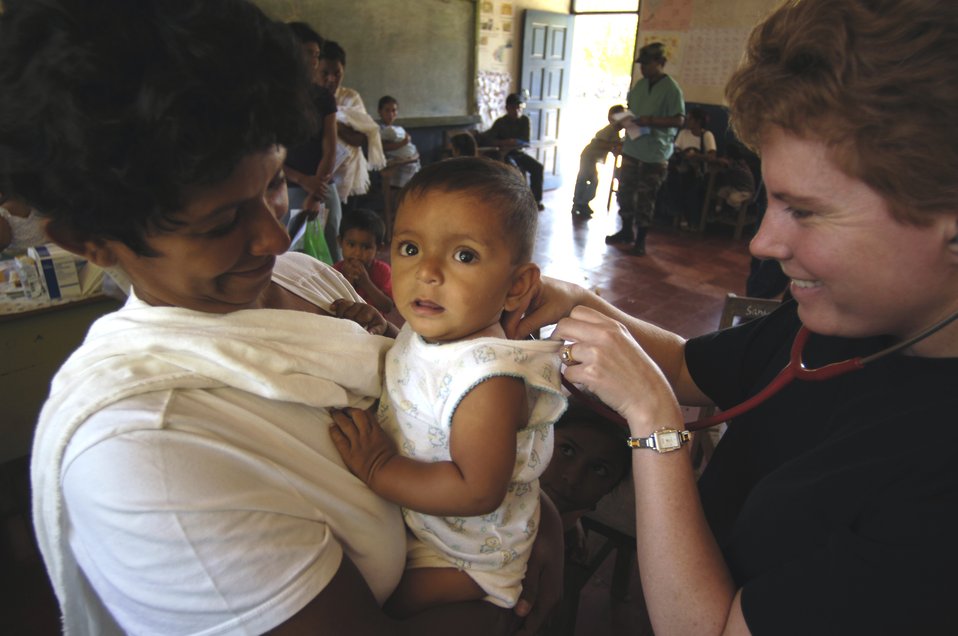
New Horizons-Nicaragua 2007

Maj. Dawn Peredo diagnoses a patient in Santa Teresa, Nicaragua, Feb. 19 during New Horizons-Nicaragua 2007, a military humanitarian and training exercise that provides aid and strengthens bonds between the two nations.